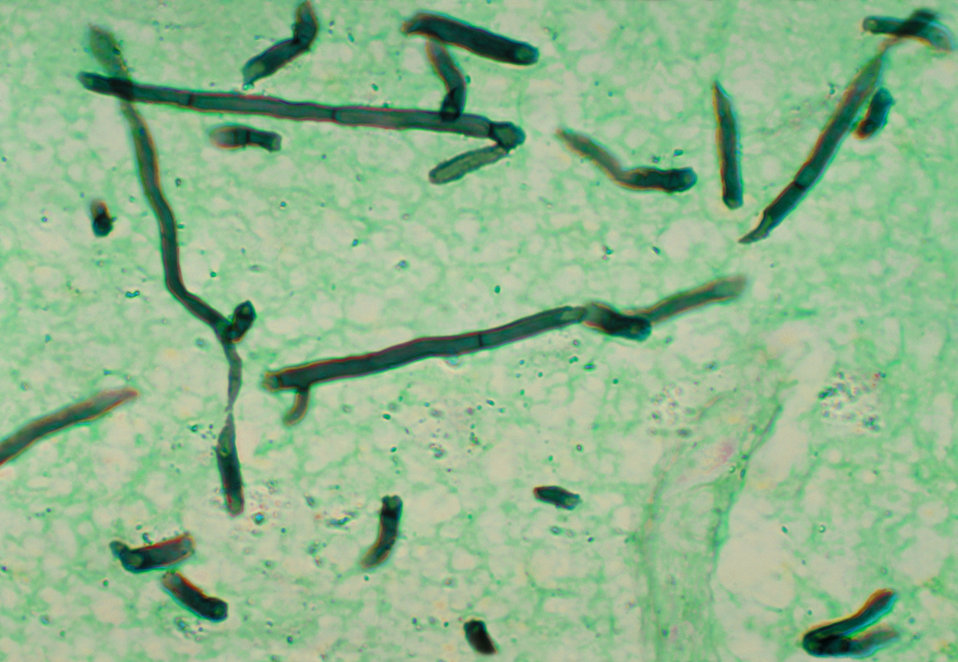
A micrograph of a pigeon brain using methenamine silver stain, revealing the presence of the fungus Ochroconis gallopavum, formerly Dactylaria gallopava.